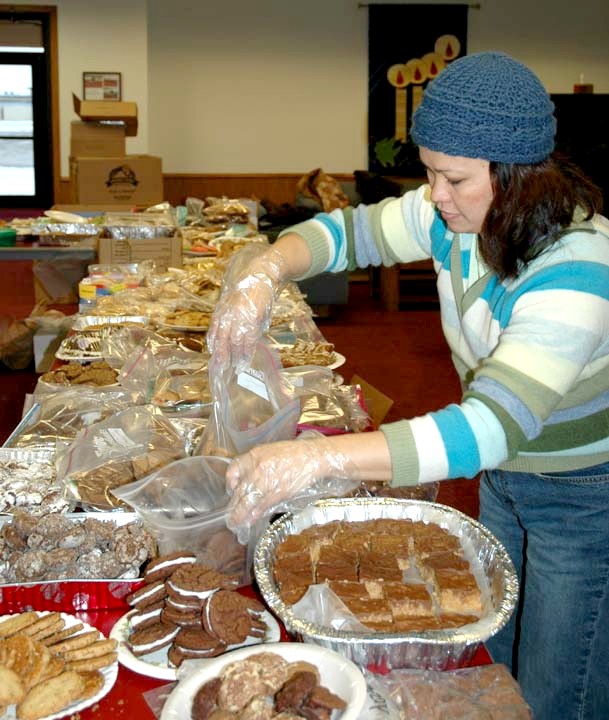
A sweet assignment

MINOT AIR FORCE BASE, N.D -- Elsa Wong sorts cookies during the base's annual cookie drive at the chapel here Dec. 7. Volunteers from the base and local community baked nearly 17,000 cookies for dormitory residents here as part of the drive. Children from the base's two elementary schools made Christmas cards to attach to the plates of goodies. When handed out during the holiday season, each dorm resident will receive about 18 cookies.